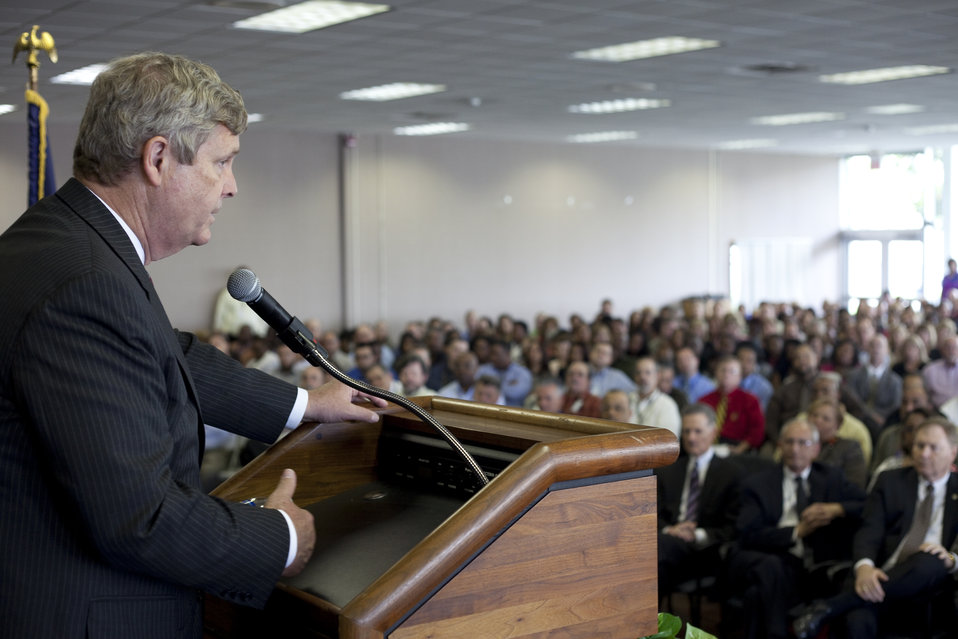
Agriculture Secretary Tom Vilsack speaks to employees at the National Finance Center in New Orleans, LA on Wednesday, May 1, 2013.